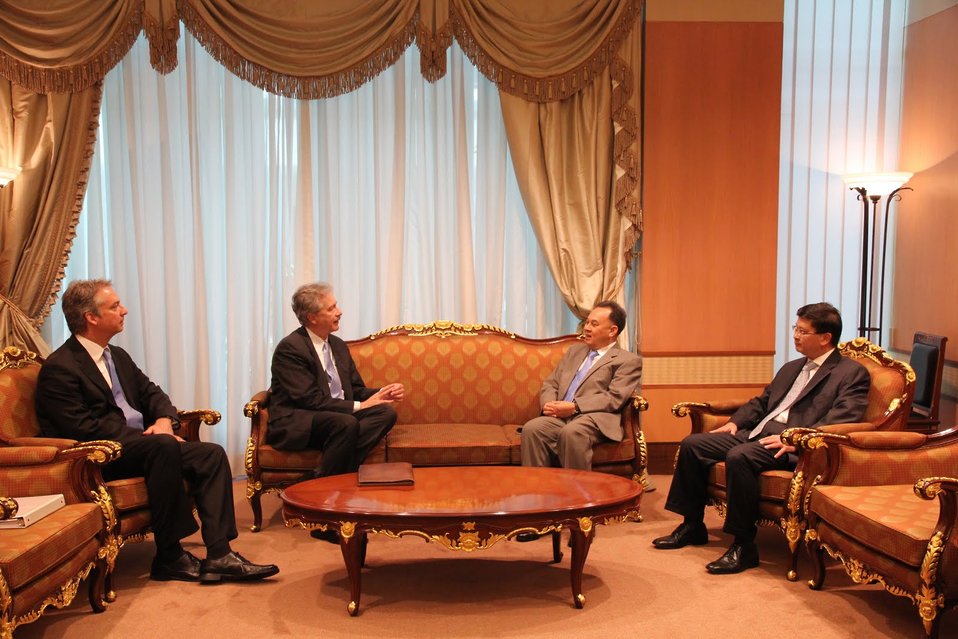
Under Secretary Burns, Ambassador John, and Thai Foreign Minister Kasit Piromya Participate in a Meeting

Under Secretary for Political Affairs William J. Burns and U.S. Ambassador to Thailand Eric G. John participate in a meeting with Thai senior government officials, including Thai Foreign Minister Kasit Piromya, at the Thai Ministry of Foreign Affairs in Bangkok, Thailand, on July 16, 2010.